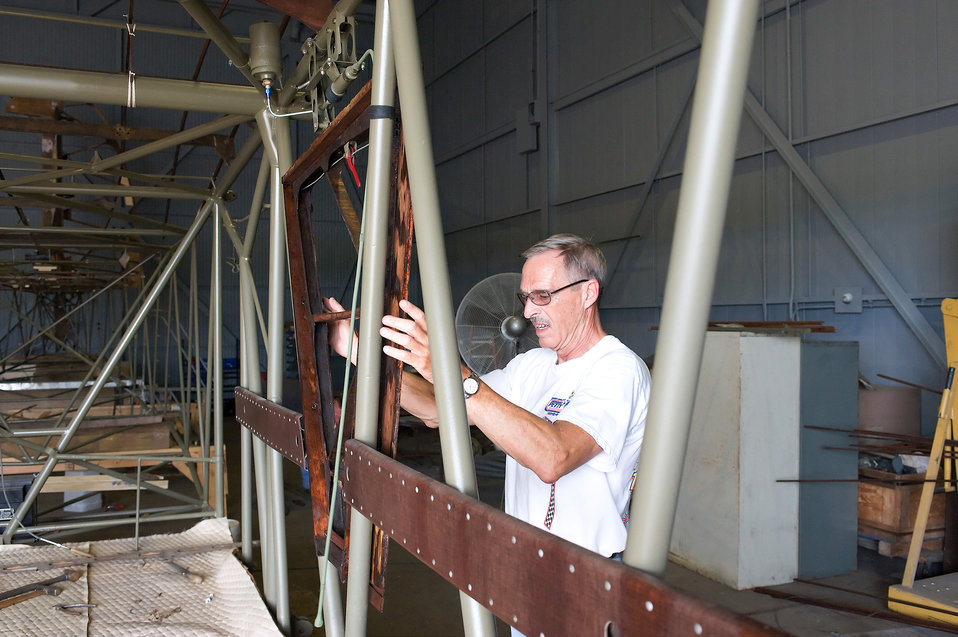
Restoring memories

Bill Lee, a restoration volunteer, examines the frame of a Waco CG-4A Combat Glider June 23, 2011, at the Air Mobility Command Museum at Dover Air Force Base, Del. The glider is being completely restored from scrap.